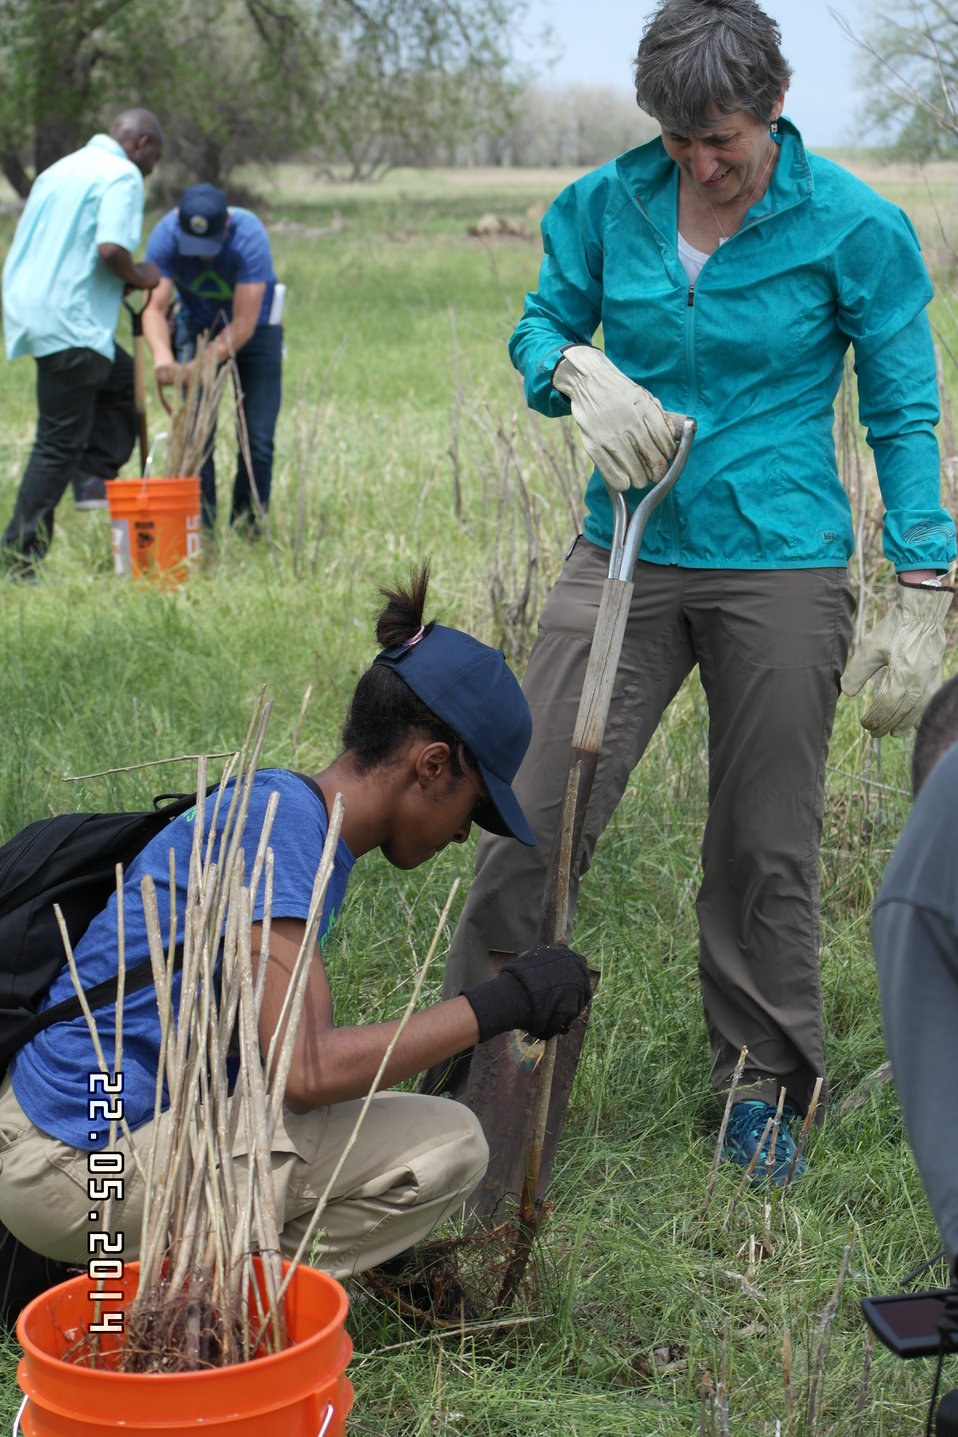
Secretary Jewell Announces $6.7 for Youth Conservation Job

Interior Secretary Sally Jewell helps local youth conservation groups plant cottonwood trees at Rocky Mountain Arsenal National Wildlife Refuge.